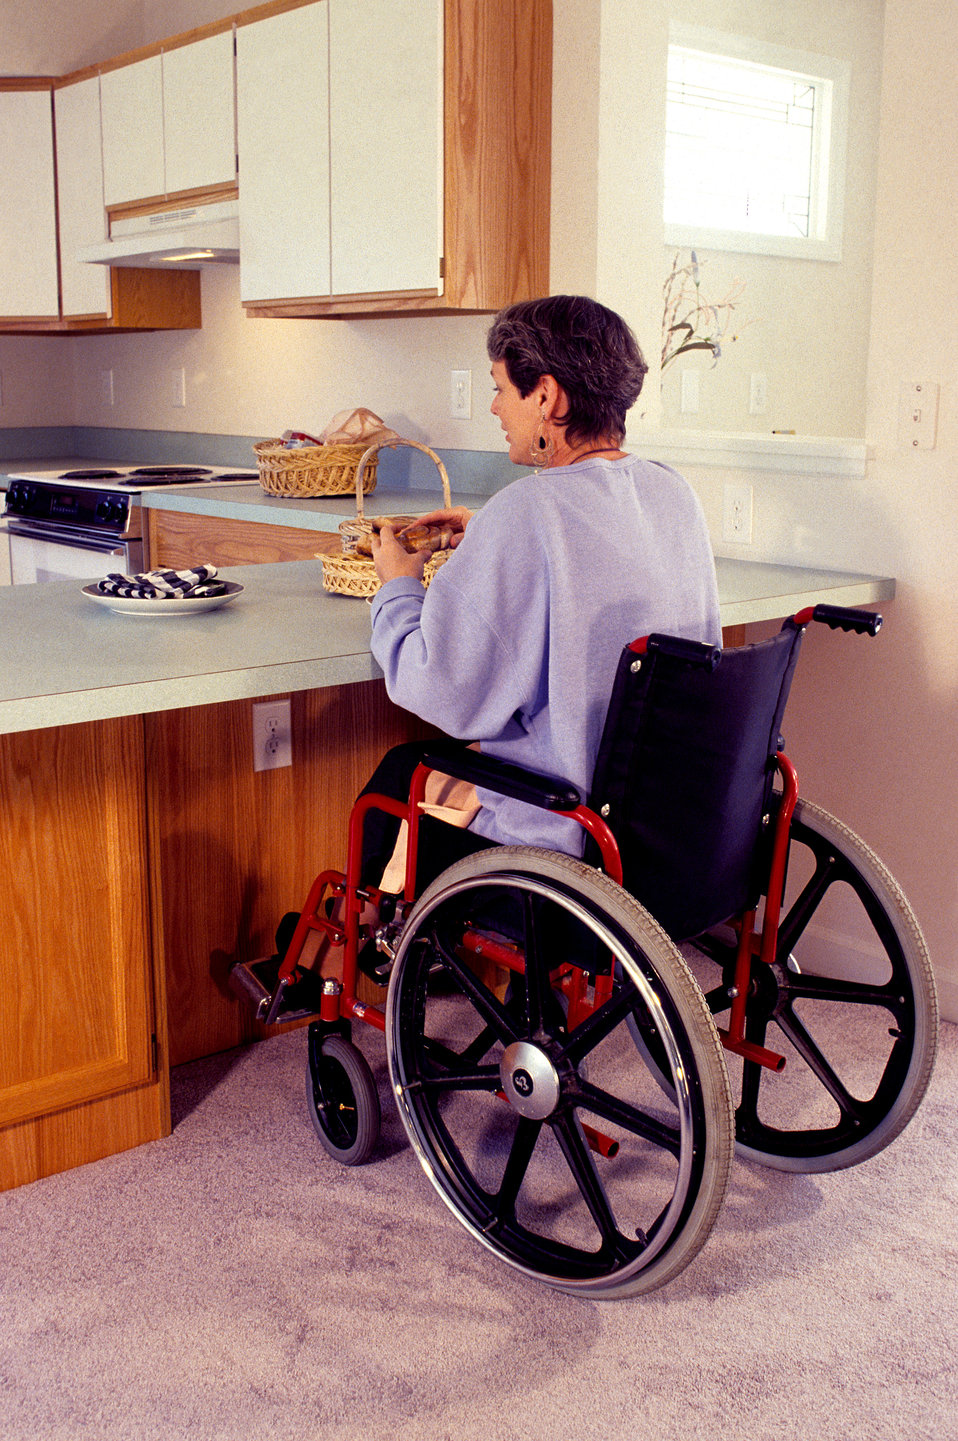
This 1994 image depicted a woman seated in her wheelchair inside a kitchen in which the cabenitry had been ergonomically-designed so as to accommodate the widest possible group of end users. These kitchen base cabinets easily converted into knee-spaces critical for people using wheelchairs, as well as those with stamina or balance limitations, who must sit while completing extended food-preparation activities. The woman in this image was getting ready to eat a honeybun while seated up close to the edge of a kitchen countertop that had been designed in order to be more accommodating, allowing a wheelchair-seated individual to pull close to the working surfaces, as seen in this example.